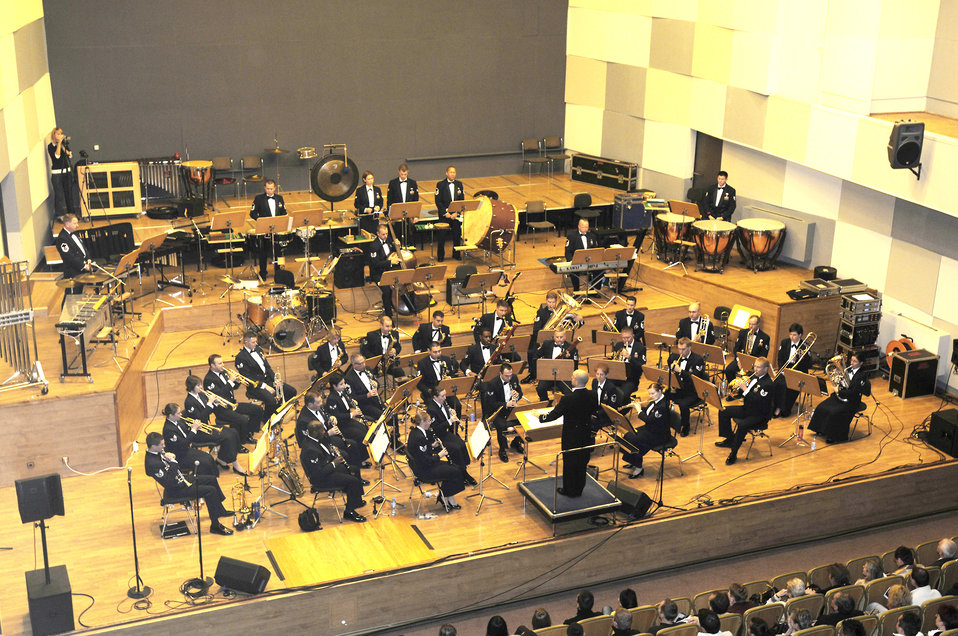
USAFE Band tours Poland

The 41-piece U.S. Air Forces in Europe Band performed in Wroclaw, Poland, Oct. 20, 2009. The band is in Poland to help support USAFE Commander Gen. Roger Brady's international relations program in partnership with the U.S. State Department.